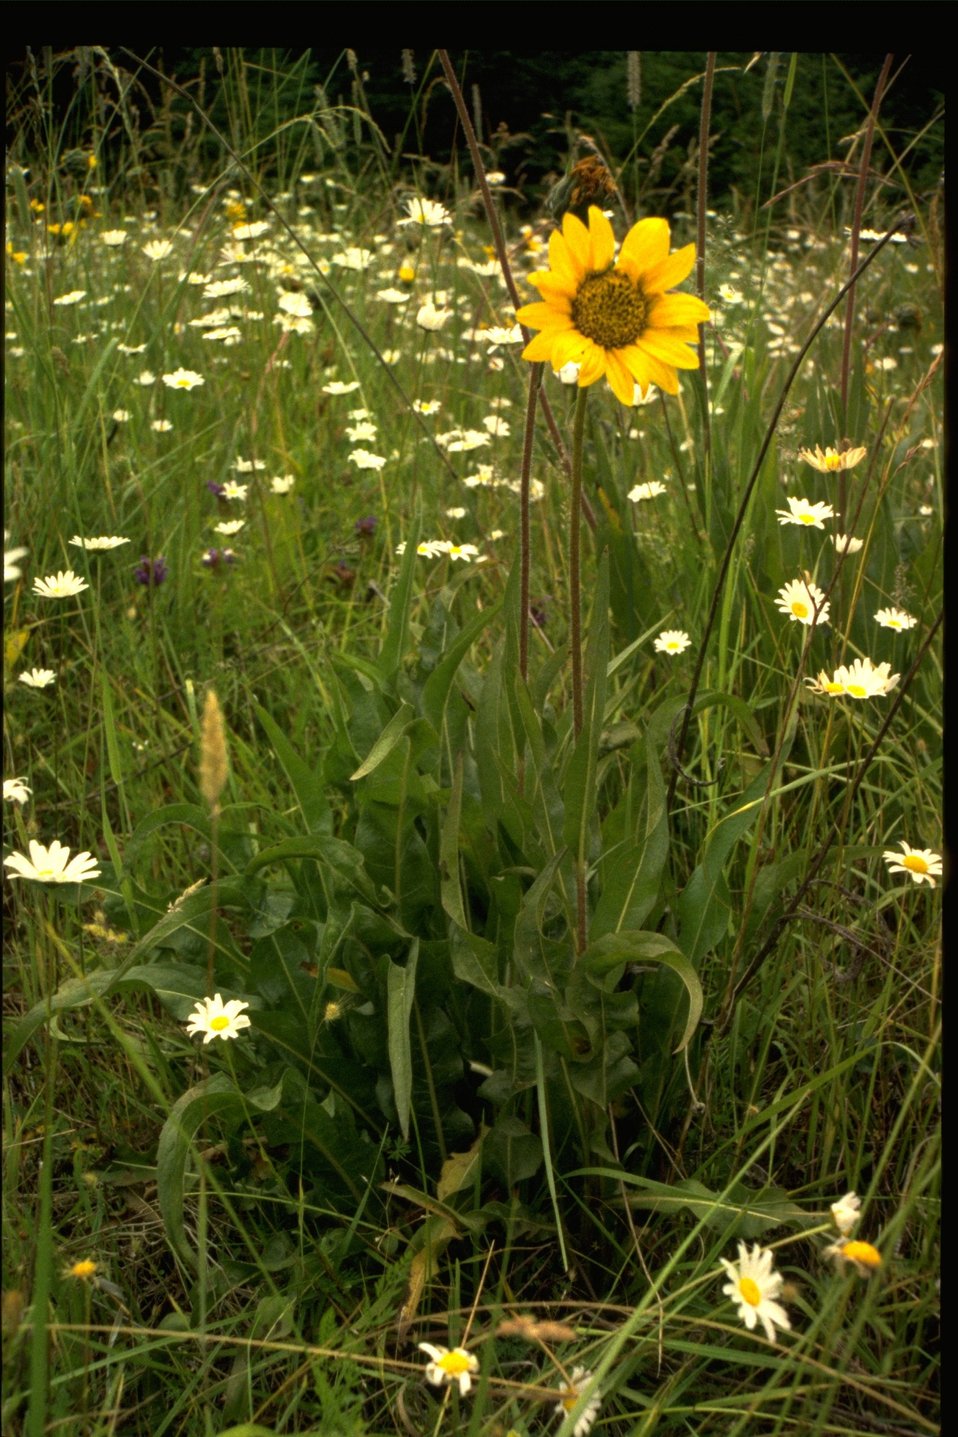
Medium shot of yellow comp Wyethia, white comp "Shasta" daisy.